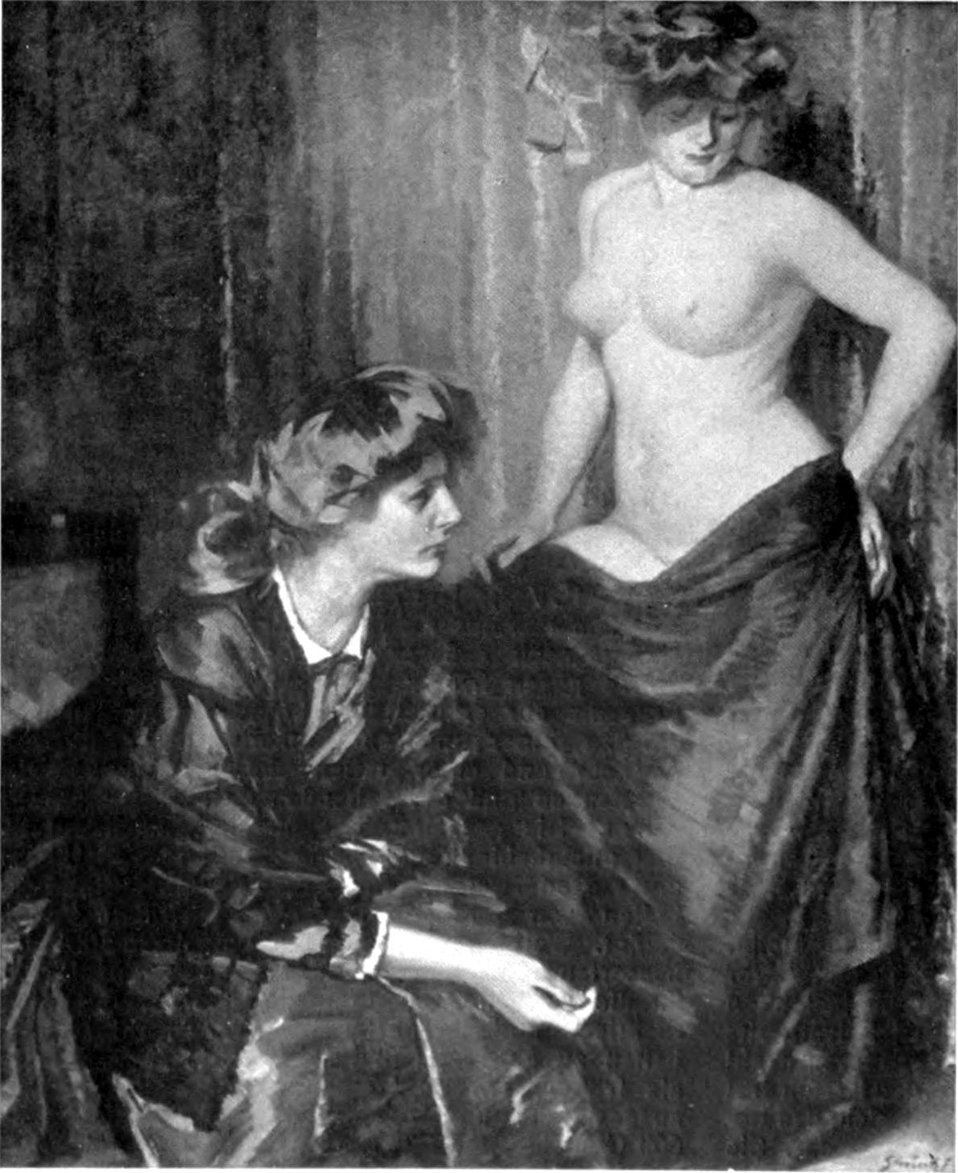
Frigyes Strobentz - Modelle